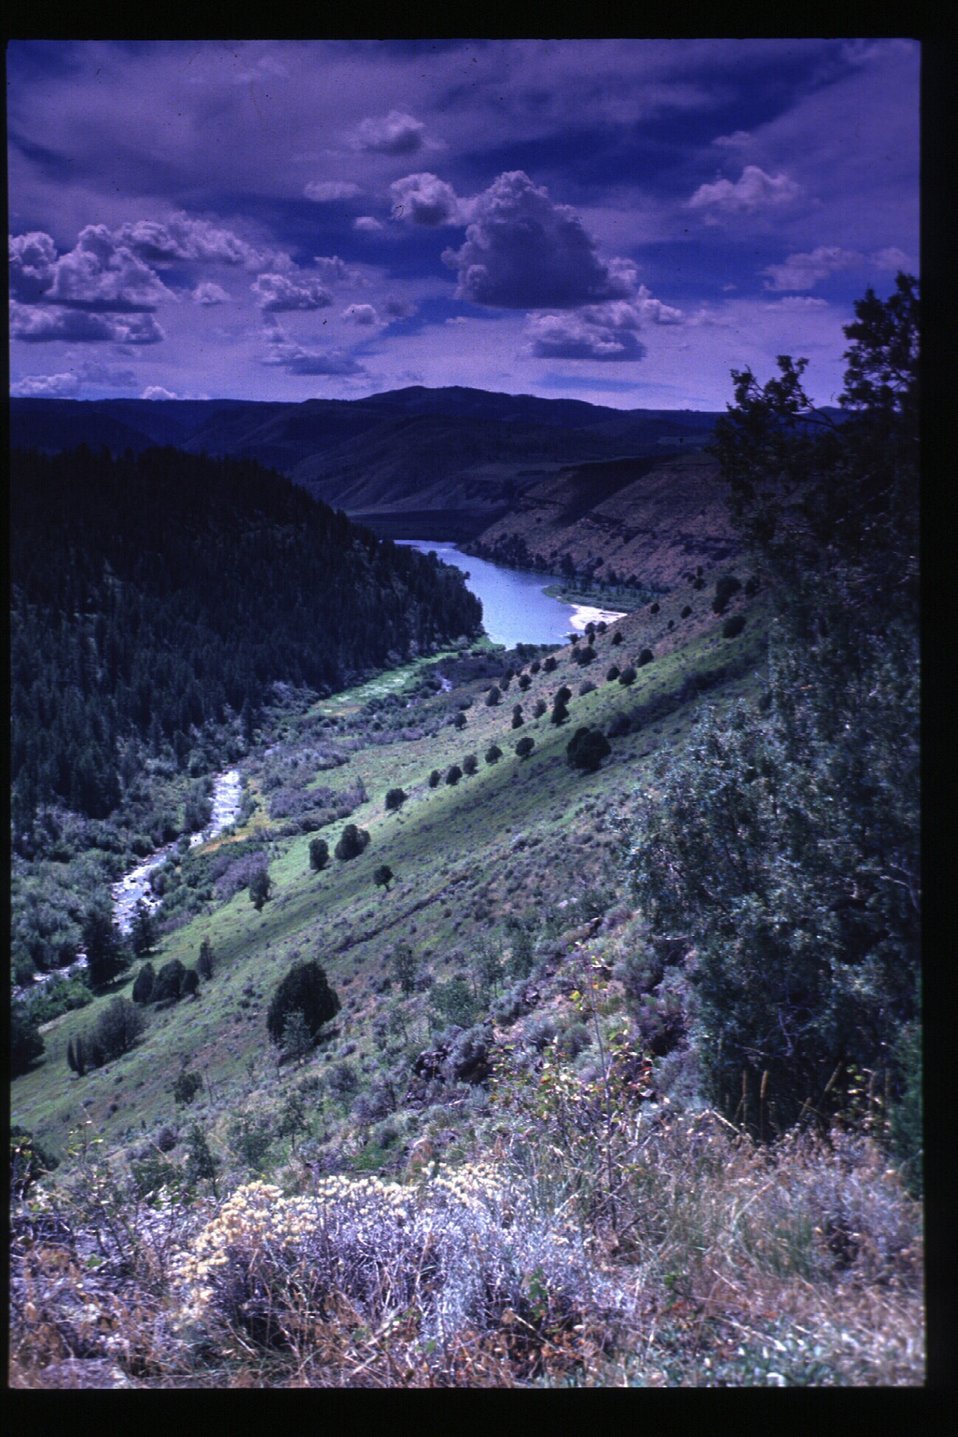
Scenic South Fork of Boise River Four Rivers Field Office LSRD Lower Snake River District